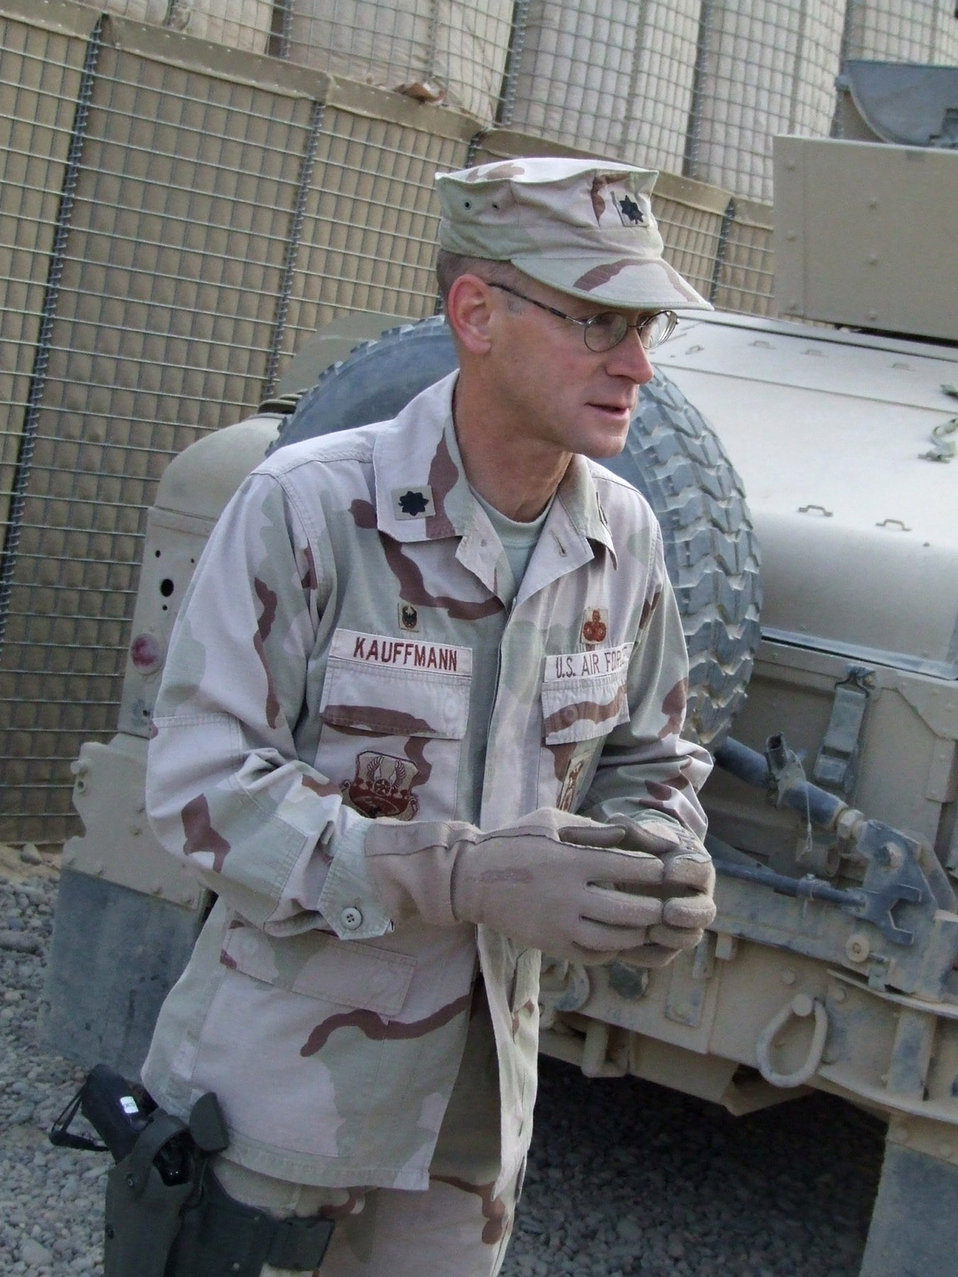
Airmen train Iraqi police

Lt. Col. Steve Kauffmann prepares to depart on a convoy from Contingency Operating Base Speicher, Iraq. Deployed from the Pentagon, Colonel Kauffmann is the commander of the 732nd Expeditionary Security Forces Squadron's Detachment 6 at COB Speicher. Detachment Airmen send convoys out daily to assess the capability of Iraqi police stations in the Salah ad Din province.